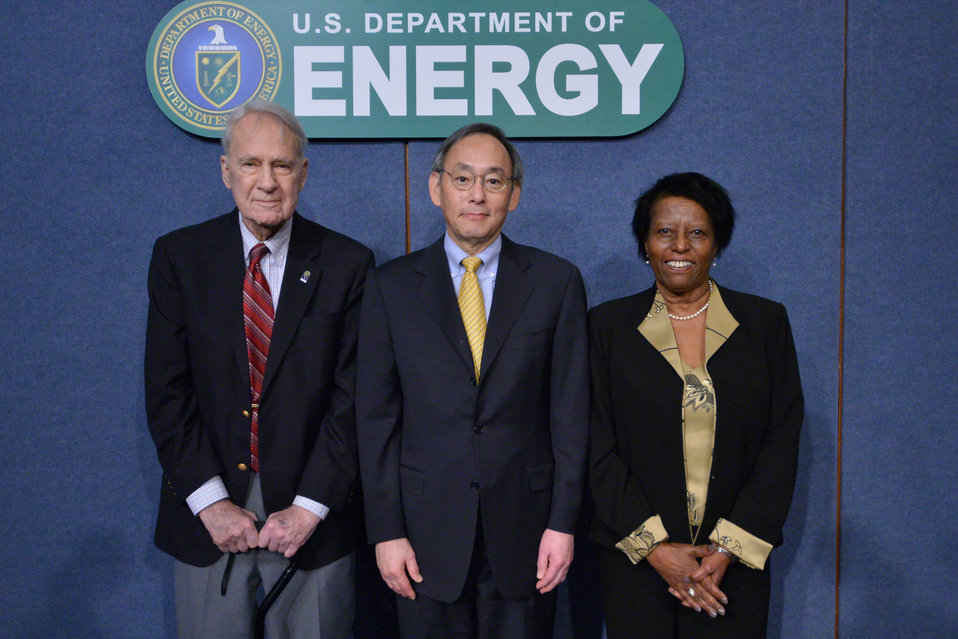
1 Hearings and Appeals

Pat Spencer, a charter employee from the Office of Hearings and Appeals, with Secretary Steven Chu, current Secretary of Energy, and Secretary James Schlesinger, first Secretary of Energy.